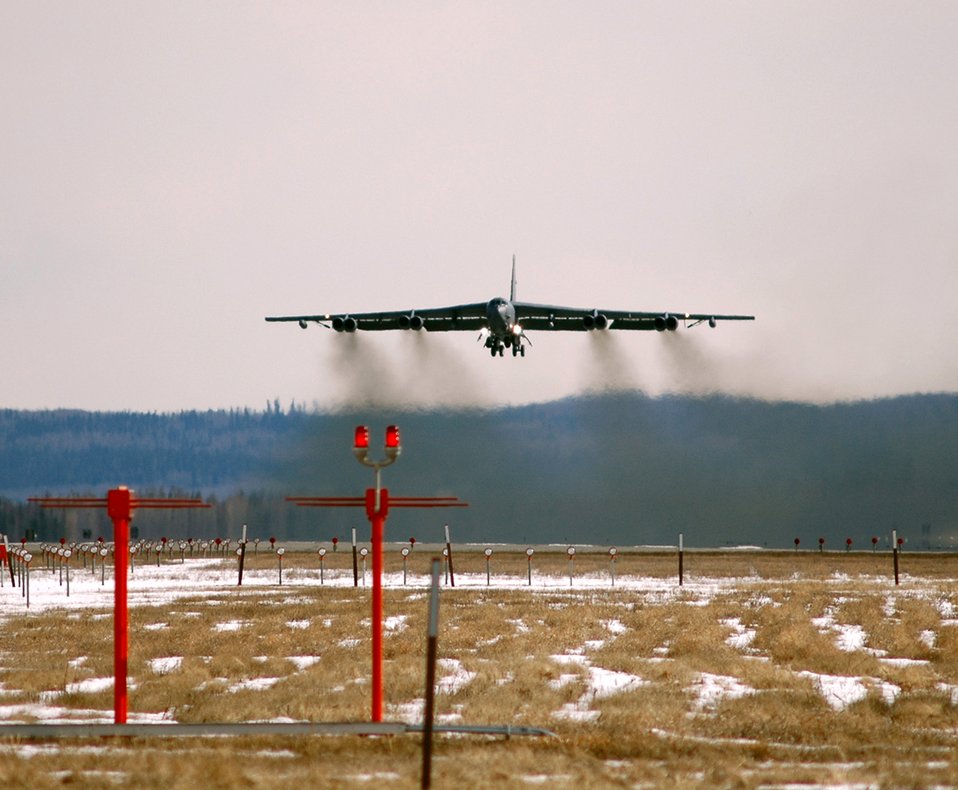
Missions begin with ATO

A B-52 Stratofortress from the 93rd Bomb Squadron at Barksdale Air Force Base, La., takes off from Eielson AFB, Alaska, on the first full day of Red Flag-Alaska 06-2, on Monday, April 24, 2006.